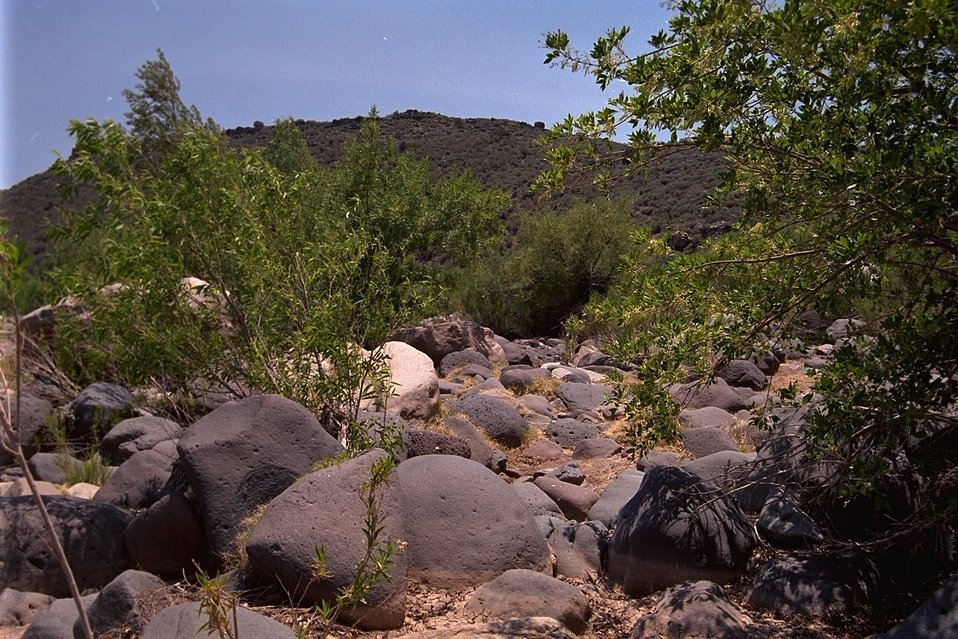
Large rocks and trees with some mountains visible in the background.